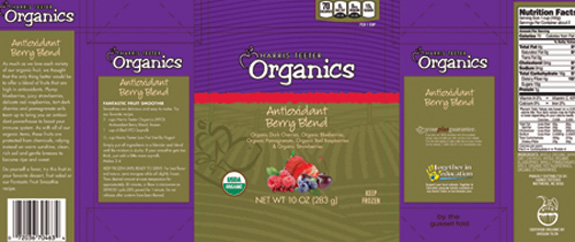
RECALLED – Organic Blend Antioxidant, Organic Antioxidant Berry Blend

June 28, 2013 – Product Recall – UPDATED RELEASE #3 UPC Code Clarification Townsend Farms, Inc. Expands Voluntary Limited Lot Recall of Frozen Organic Antioxidant Blend, 3 lb. Bag.